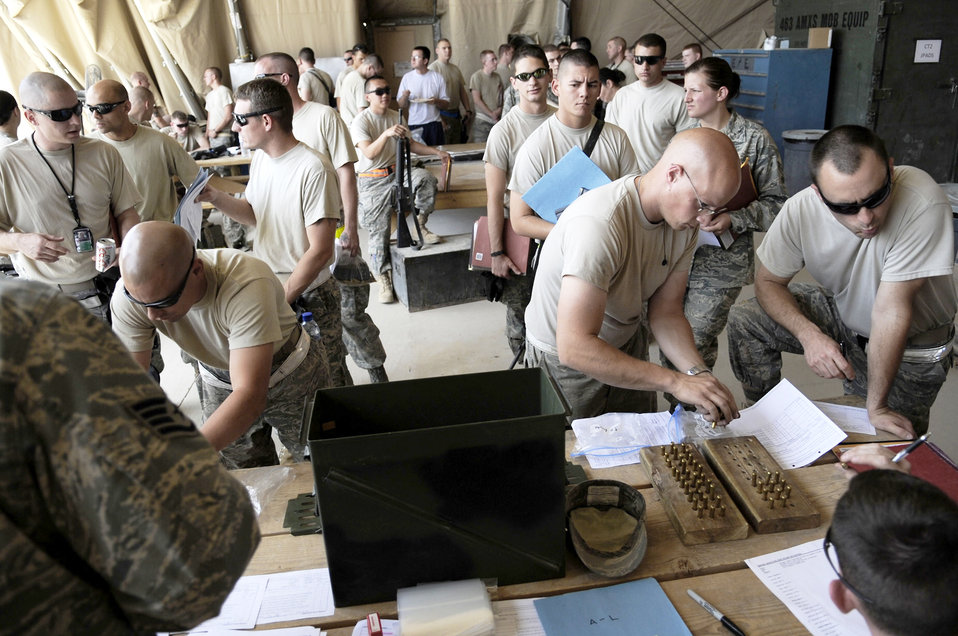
Combat arms teams support all operations

The combat arms training and maintenance team from the 451st Expeditionary Security Forces Squadron visited to the 451st Expeditionary Aircraft Maintenance Squadron to receive and issue ammunition April 16, 2010, at Kandahar Airfield, Afghanistan.